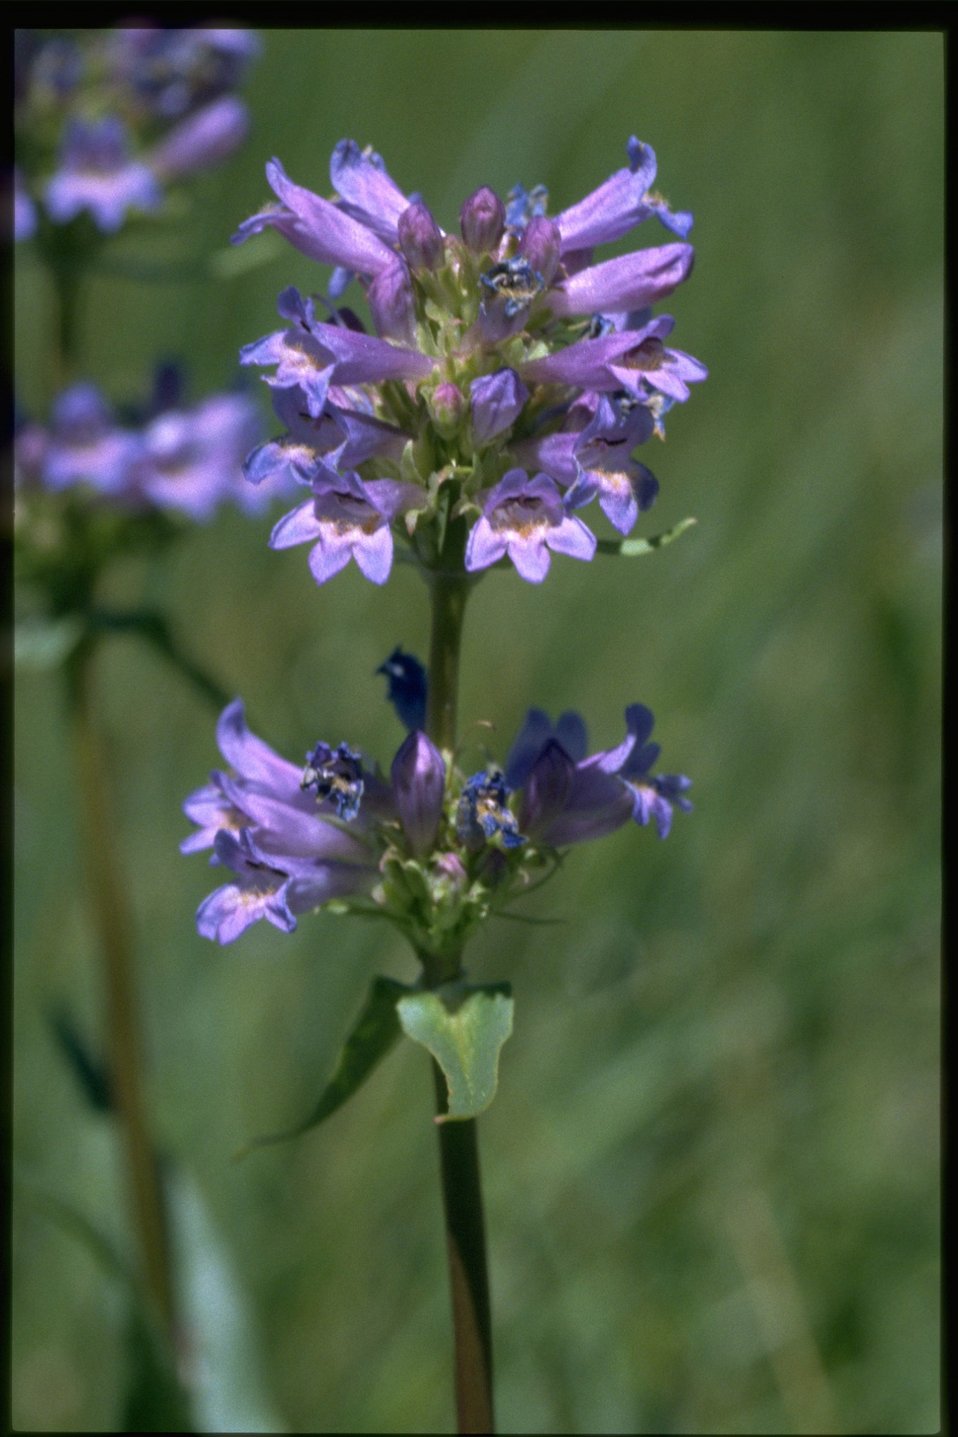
Medium shot of Penstemon wildflowers.